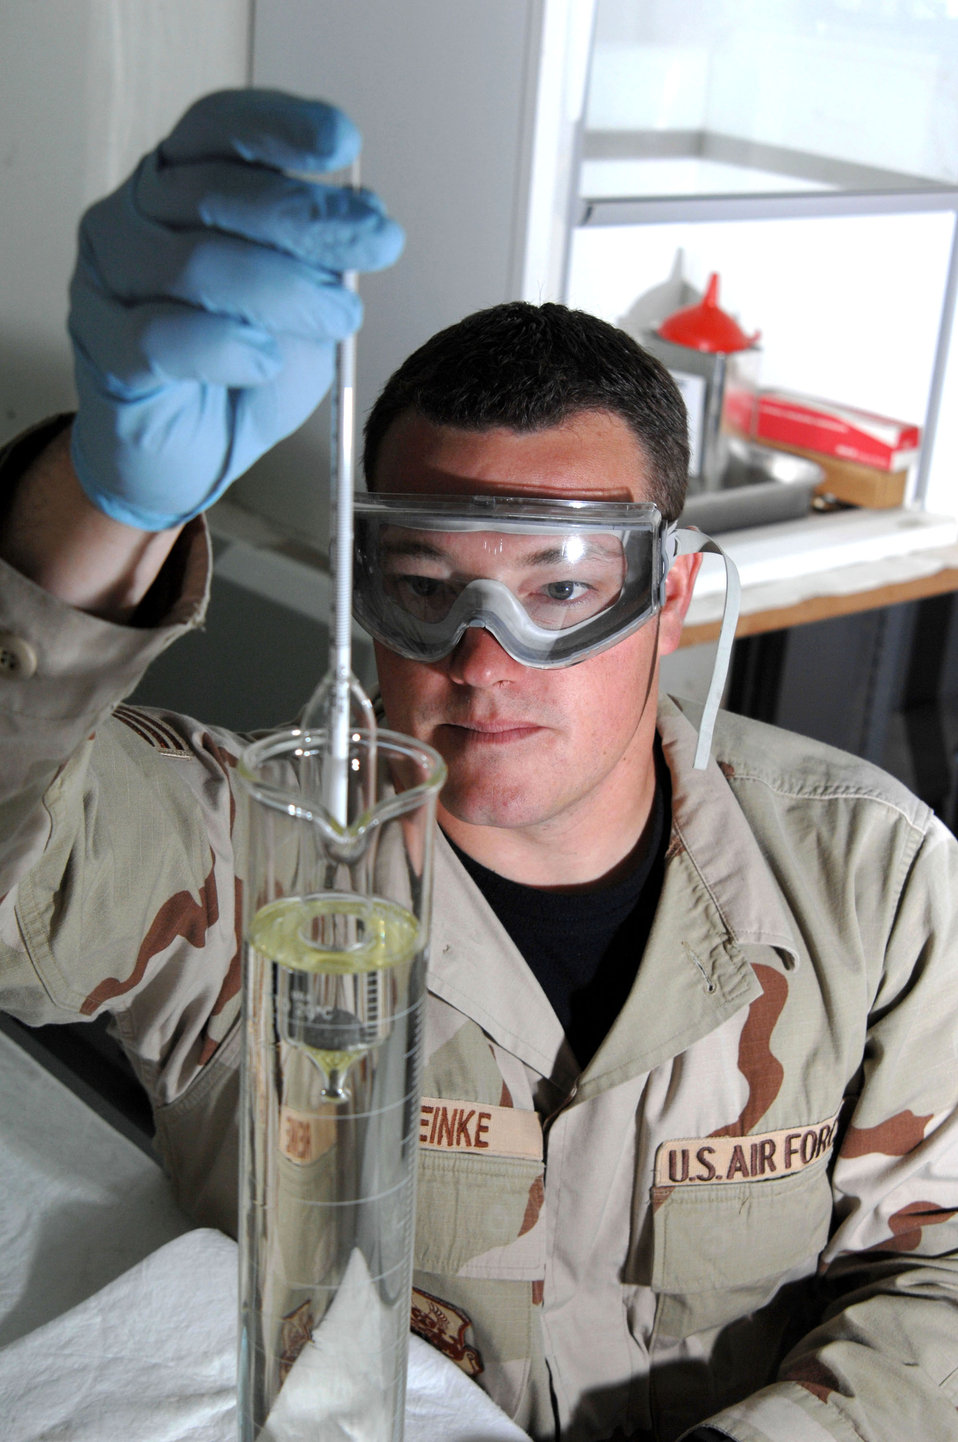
Keepin' the fuel flowin' in Kirkuk

Senior Airman Jason Reinke performs a specific gravity test on JP-8 fuel April 5 at Kirkuk Air Base in Iraq. The fuels lab provides quality control to all fuel used by local Air Force, Army, and Iraqi personnel. Airman Reinke is a fuels lab technician with the 506th Expeditionary Logistics Readiness Squadron.